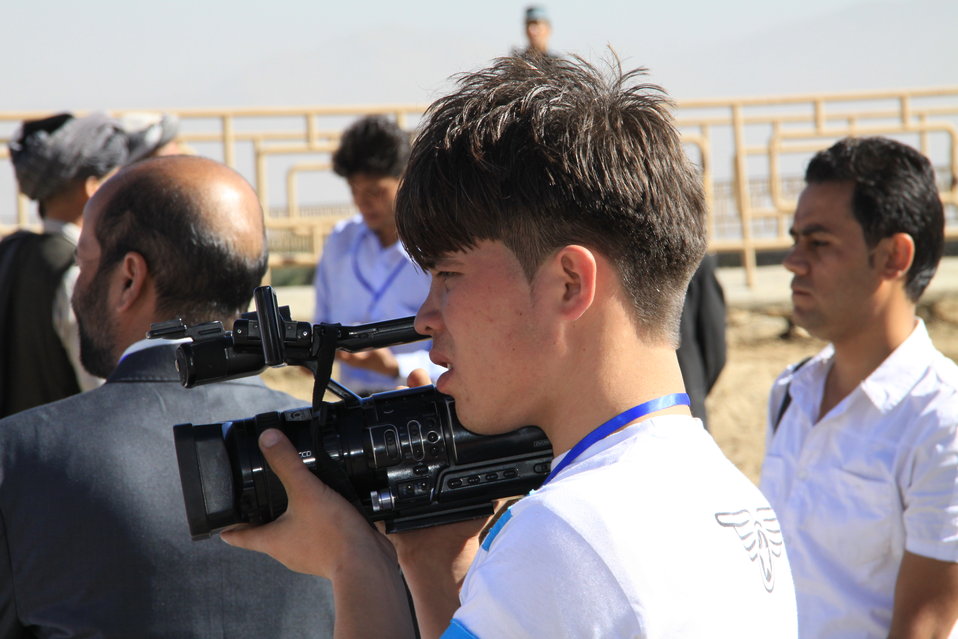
AVIPA Plus Wheat Seed Distribution 101005

US Ambassador Karl Eikenberry and USAID Acting Mission Director Kevin Brownawell joined the Minister of Agriculture, Irrigation and Livestock, H.E. Minister Mohammed Rahimi in signing a Memorandum of Understanding and distributing vouchers to area farmers for wheat and fertilizer.